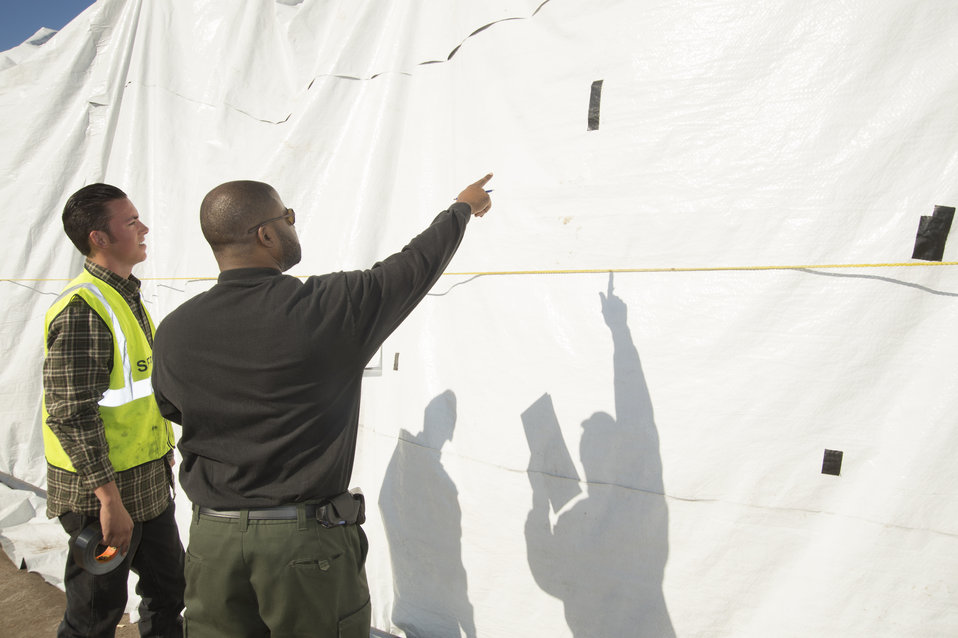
U.S. Department of Agriculture’s (USDA) Animal and Plant Health Inspection Service (APHIS) employee examines the fumigaion tent used on U.S. logs for export near the Port of New Orleans in New Orleans, LA on Wednesday, Nov. 20, 2013. The fumigation process prevents the spread of any bacteria or insect that might cause harm to a foreign country’s agriculture.